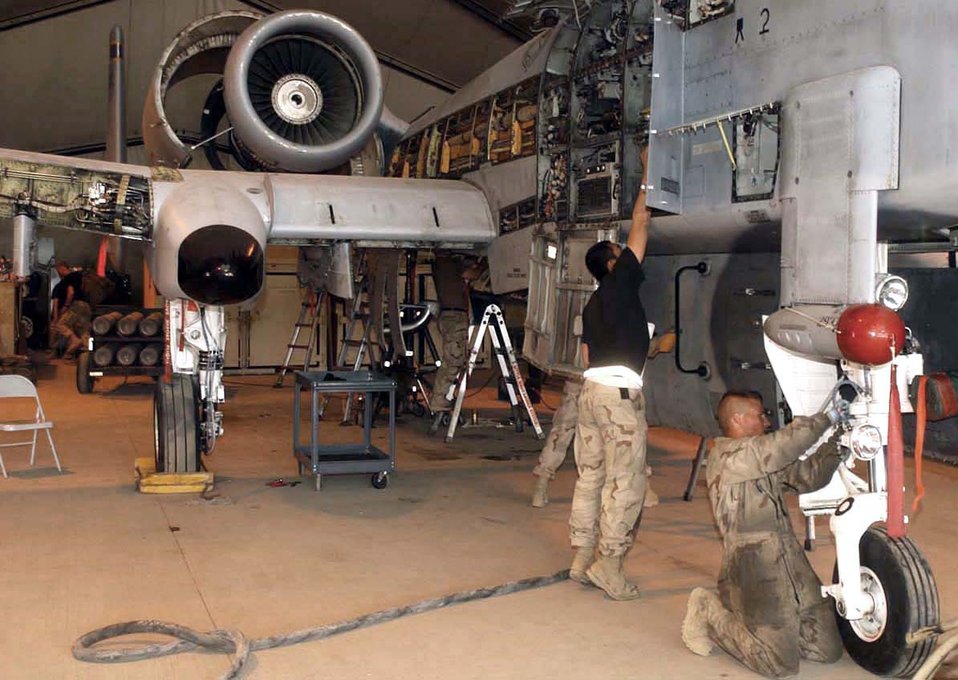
Phase maintenance

BAGRAM AIR BASE, Afghanistan -- Airman 1st Class Daniel Hanamoto (standing) inspects an electro-environmental component on an A-10 Thunderbolt II while Senior Airman Shane Neel installs a nose wheel steering cover to the aircraft. Both Airmen are assigned to the 455th Expeditionary Aircraft Maintenance Squadron.